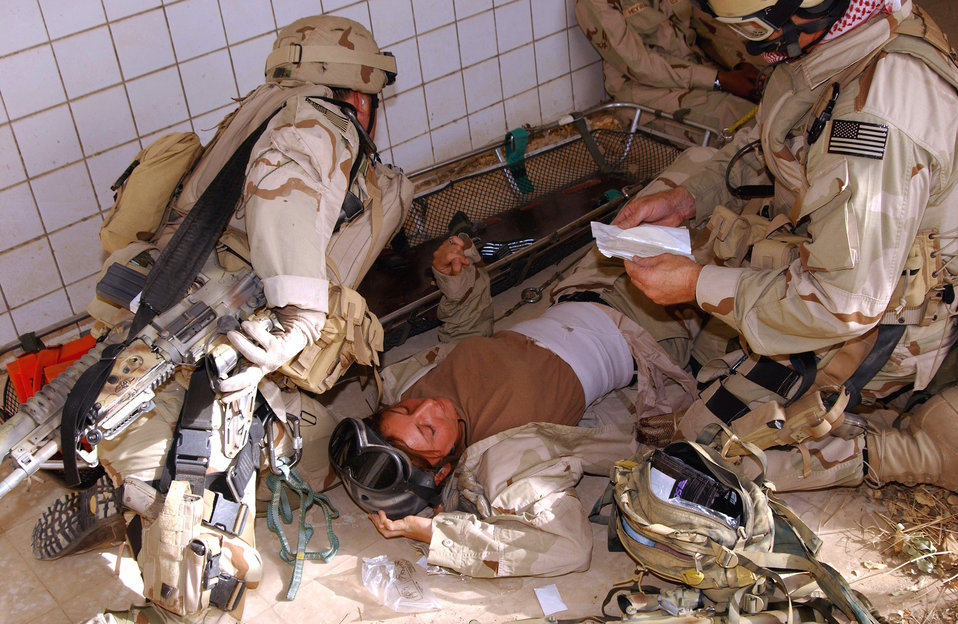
Rescued

BAGHDAD, Iraq (AFPN) --Staff Sgt. Michael Darin (left) and Chief Master Sgt. Timothy Malloy (right) provide simulated first aid to Senior Airman Kristy Riseden during a recent search and rescue training exercise here. Darin and Malloy are both pararescuemen with the 101st Expeditionary Rescue Squadron.